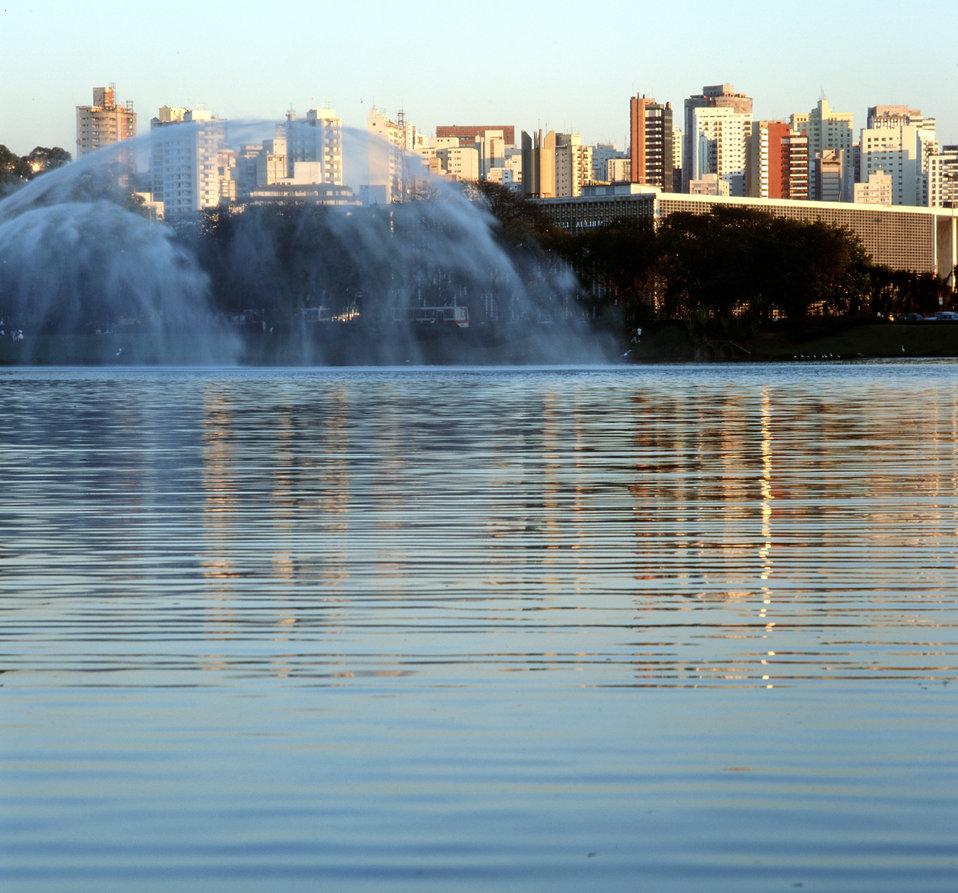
Ibirapuera park, Sao Paulo